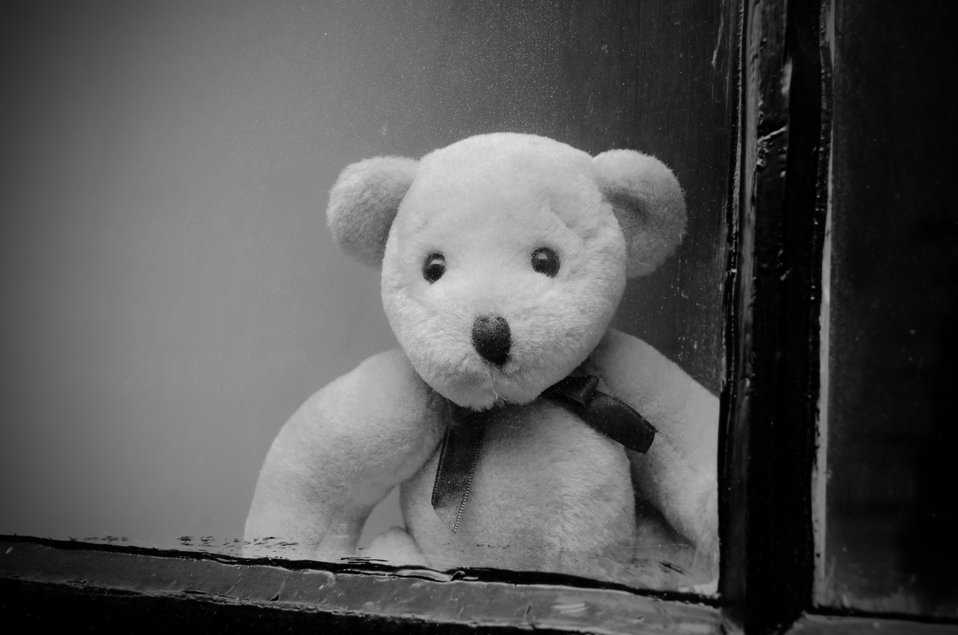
Teddy bear behind a window.